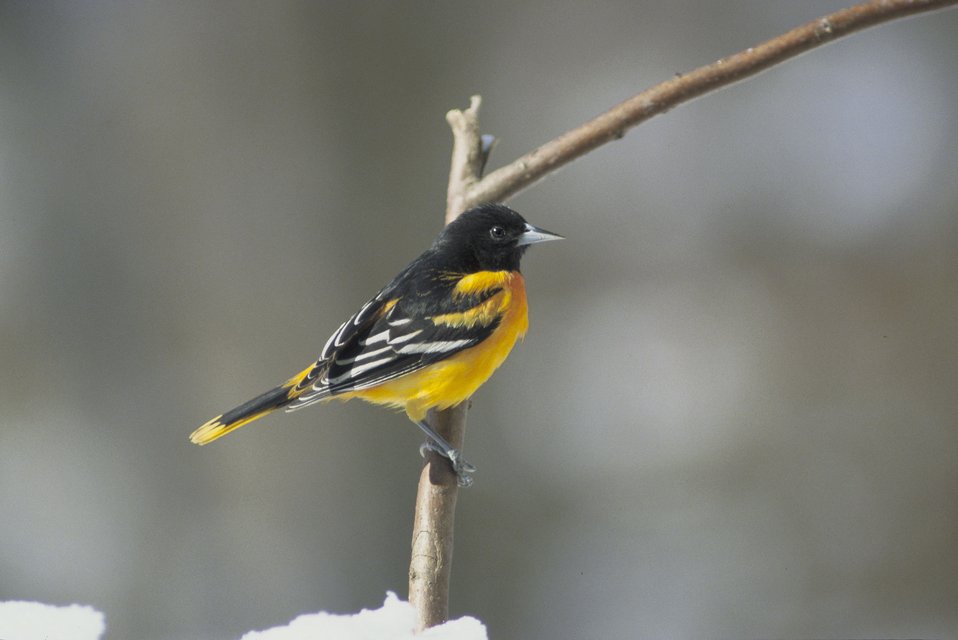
Photo of the Week - Male Baltimore Oriole

Photo of the Week - 3/9/10

Male Baltimore oriole.